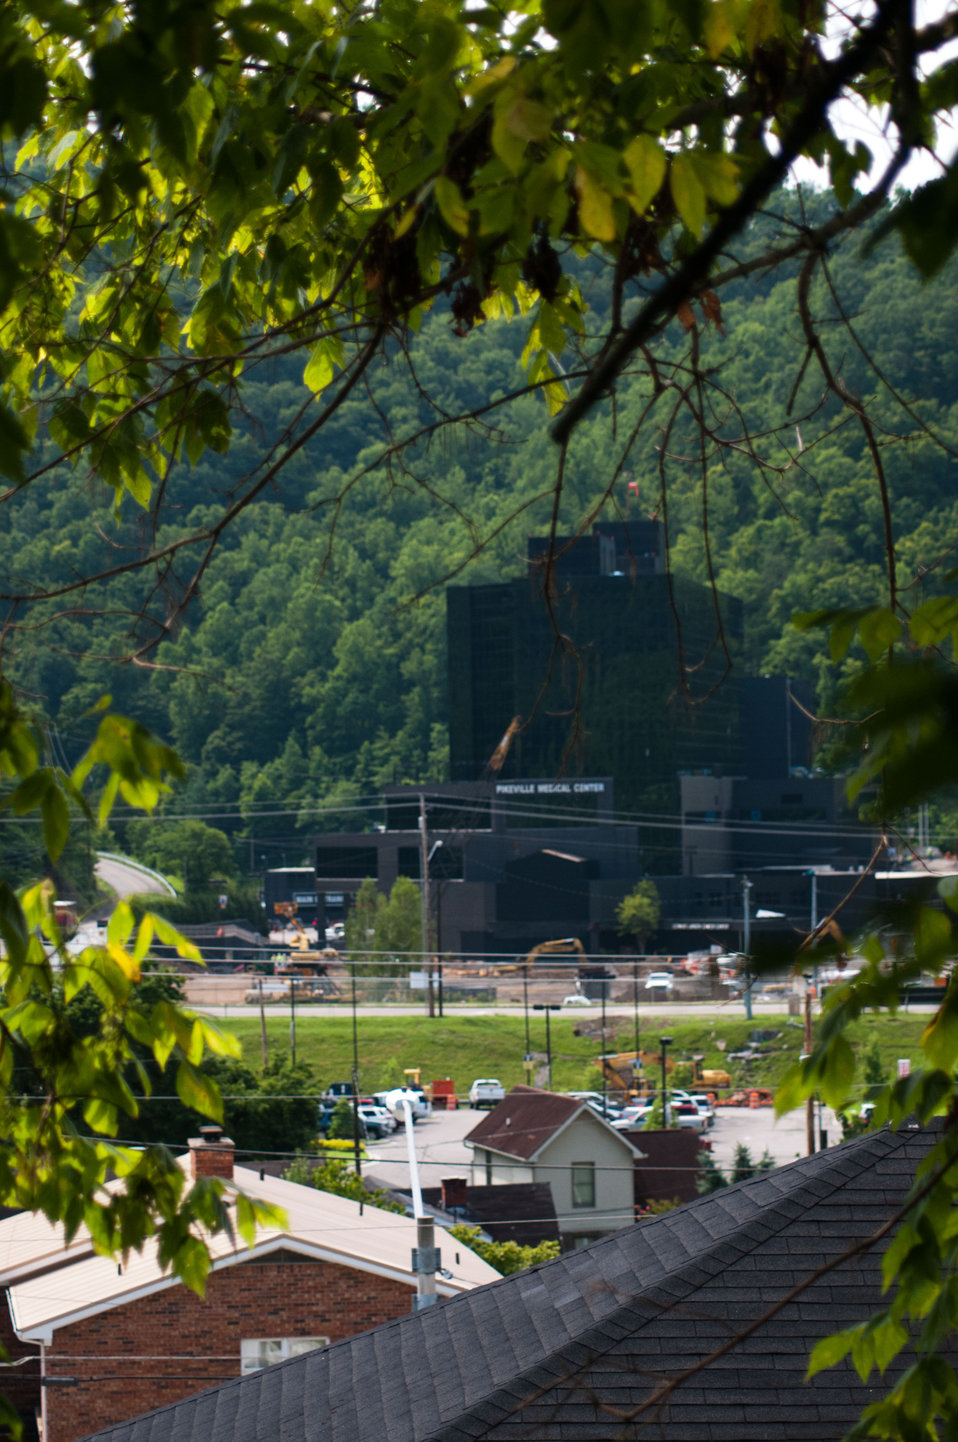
From across the horseshoe shaped town of Pikeville, KY, various buildings, parking lots, temporary walkways, and above ground construction of the Pikeville Medical Center (PMC) expansion project, on Tuesday, July 12, 2011, in Pikeville, KY. After months of infrastructure construction and rain delays, one of Kentucky’s largest American Recovery and Reinvestment Act (ARRA) projects is under way. The $44.6 million Community Facilities Loan will finance construction of a new medical office building and parking garage. The new medical office building will house outpatient surgery, endoscopy, surgical support and provide exam, waiting and office space for 23 primary and specialty care physicians. It also will contain a medical research center to support existing research – in conjunction with Pikeville College – on health disparities, genetic research related to the prevalence of cancer and other areas, including drug and treatment trials. The new parking garage with more than 1,000 spaces will be built adjacent to the new medical building, eliminating the need to shuttle patients back and forth from remote parking areas. The new garage will provide closer and easier proximity to medical and hospital services for all patients.
Wayne Rutherford, County Judge-Executive for Pike County, says funding from ARRA is a boon for his county because it will create jobs.

“This is great for Pike County’s economy. We know we have a great hospital, and with this support, it will be even better,” said Rutherford. “The unemployment rate here is above the state average and this will stimulate jobs. There will be construction, which means lots of jobs on the front end – and even more once it is built.”

Pike County is one of Kentucky’s persistent poverty counties and the current medical facility provides health care services for a rural population of more than 68,000. This project will create 1,430 direct and indirect construction jobs, in addition to 97 long-term jobs. It is scheduled to be completed in December 2012.

“This project is a prime example of the ARRA monies being utilized for much-needed health care facility expansion in an economically-depressed region of Eastern Kentucky and Appalachia,” said Tom Fern, State Director for Rural Development in Kentucky. “This hospital has received national recognition for its quality of care, and this money will allow them to expand and build upon their success and continue providing quality health care services to the region.”

PMC was named National Hospital of the Year by the American Alliance of Healthcare Providers in November 2009. The hospital was among 400 elite health care facilities to apply for this prestigious honor. To earn this recognition, PMC competed against more than 400 hospitals, including the Mayo Clinic, the John Hopkins Hospital, Cedar-Sinai Medical Center, the Cleveland Clinic, Duke University Medical Center and Vanderbilt University.

Pikeville City Manager Donovan Blackburn said the medical center is the largest employer in Pikeville and contributes nearly $2 million to the city through the payment of occupational taxes. He went on to say that Pikeville Medical’s success is also the city’s success because as other cities struggle with dwindling revenues, Pikeville has actually seen growth.

“This is a regional medical center that is very important to the city. Pikeville is a legal, financial and education hub for Eastern Kentucky and a gateway to rural communities in Virginia and West Virginia. There are half a million within a 50-mile radius – so it’s not just local people that depend on this facility,” said Blackburn. “From a regional standpoint it adds volume from a jobs standpoint. Everybody in this county knows someone or has family that works for Pikeville Medical Center.
“People in this area used to have to go out of the area for good jobs and quality medical services, but Pikeville Medical has changed that,” added Blackburn. 'And it has impact on other parts of the city’s economy – hotels, restaurants and retail. It increases the quality of life tenfold.”

The Recovery Act was designed to spend money gradually over time in order to sustain a true recovery – with peak spending to occur early this year. While the experts agree that ARRA is already responsible for creating or saving approximately two million jobs, about 75 percent of recipients that reported on their Recover Act spending indicated their projects are less than half complete, meaning there is even more job impact from those dollars to come.